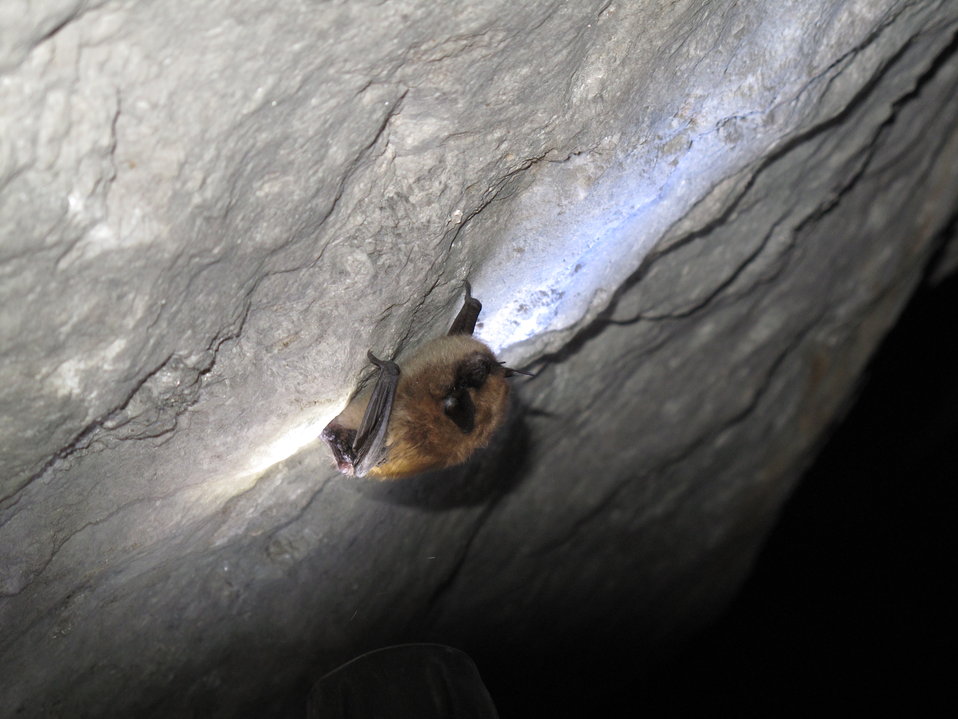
Bat on mine wall